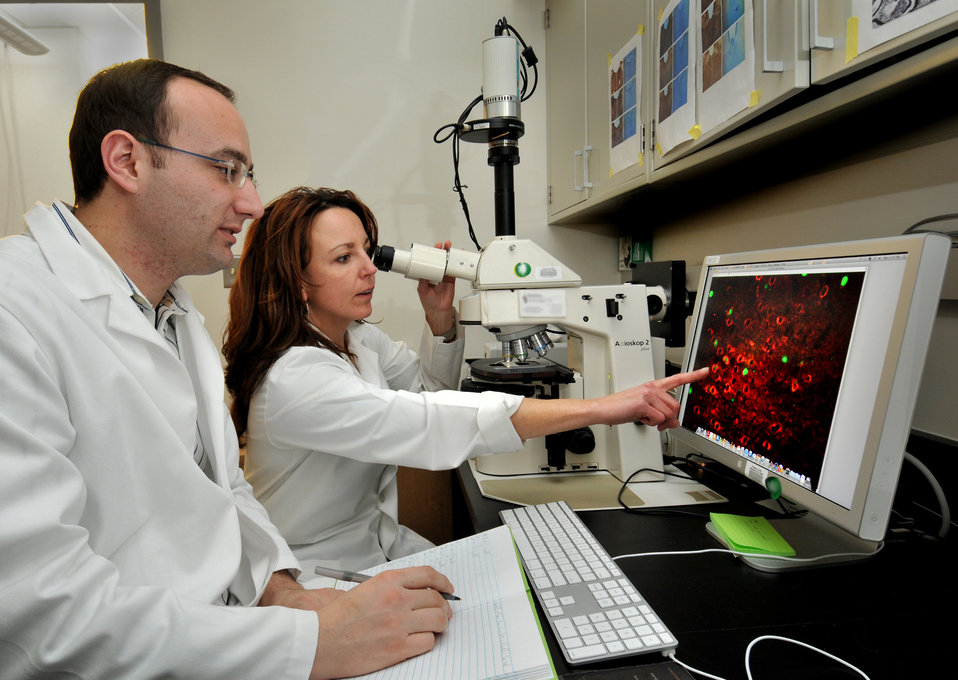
IRP Research

Jennifer Bossert reviewing data imagery in IRP's group-neurobiology of Relapses Section.; unknown photographer